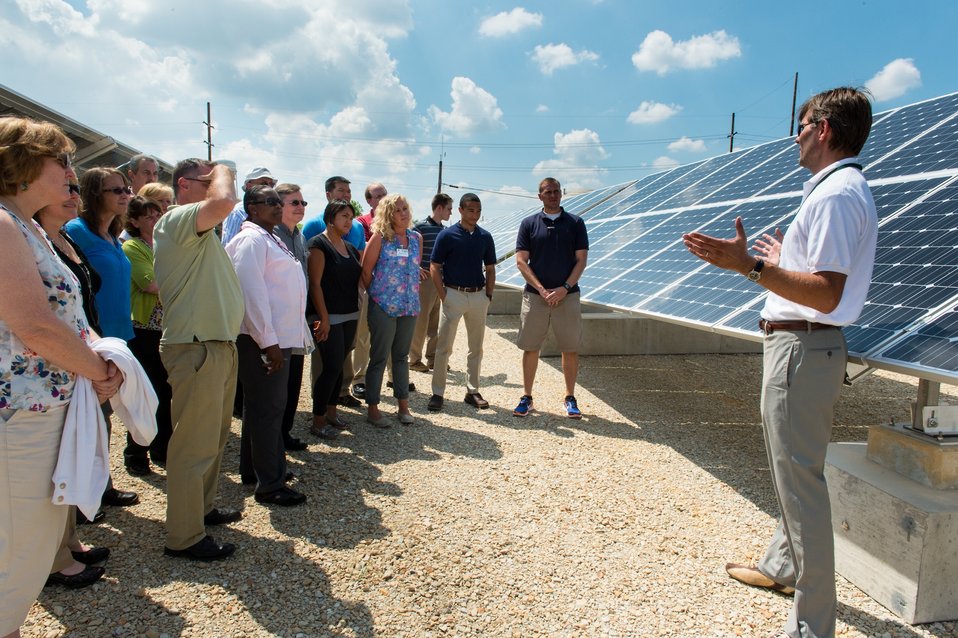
PARTICIPANTS IN THE 2013 ARGONNE SUSTAINABILITY TEACHERS WORKSHOP.

Workshop participants had an opportunity to learn more about solar research conducted at ANL while checking out the lab's 95kw solar array.